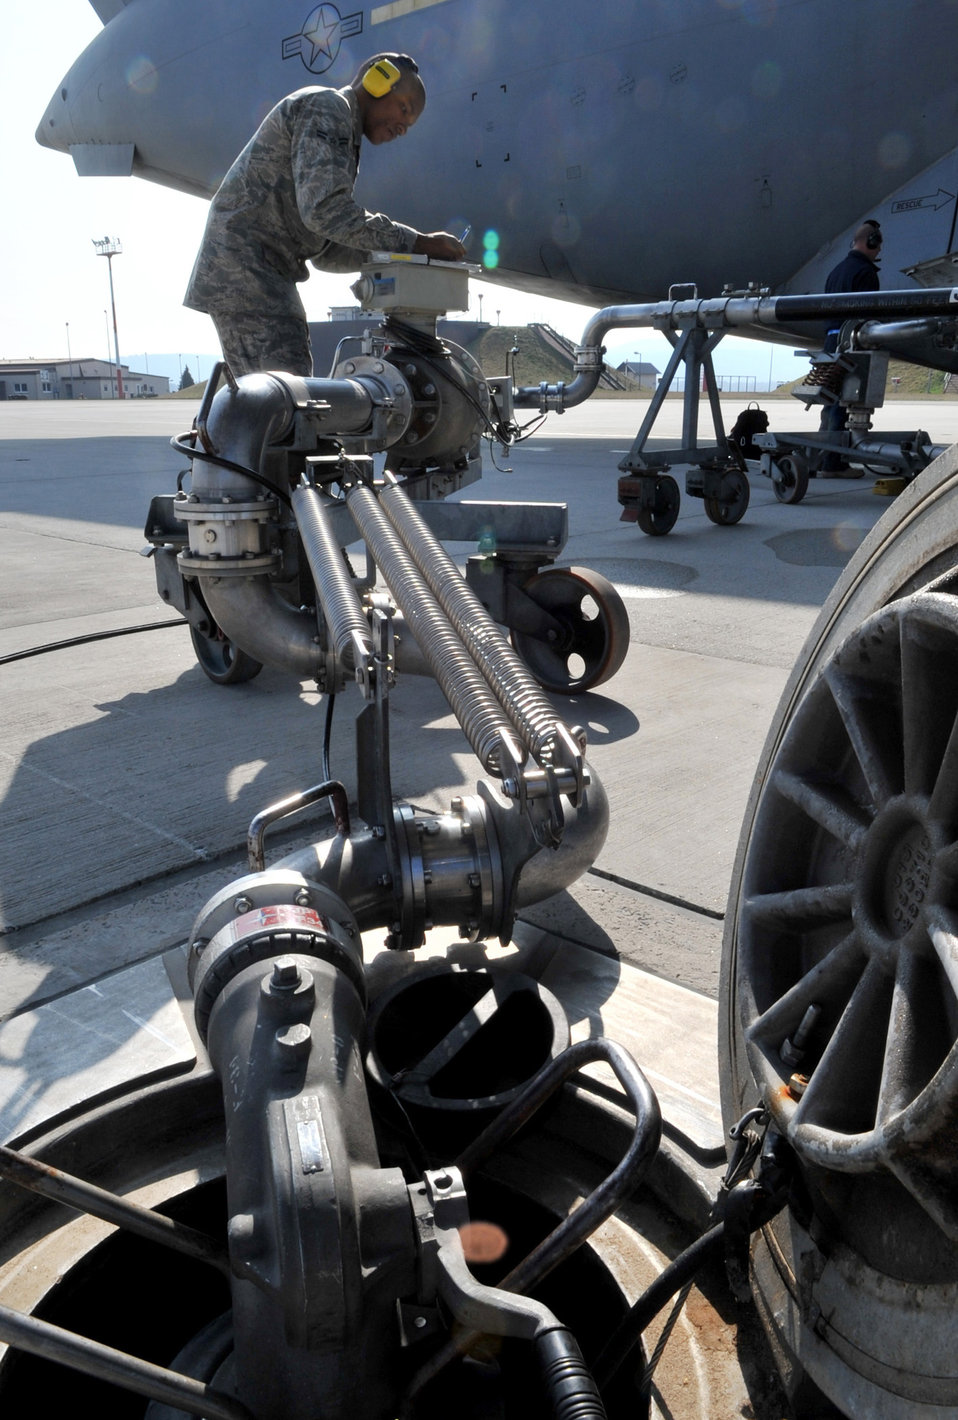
Aircraft ready for Odyssey Dawn

Airman 1st Class Rakim Tate makes preparations to refuel a C-17 Globemaster III March 29, 2011, at Ramstein Air Base, Germany, in support of Operation Odyssey Dawn. Tate is a fuels distribution operator assigned to the 86th Logistics Readiness Squadron.